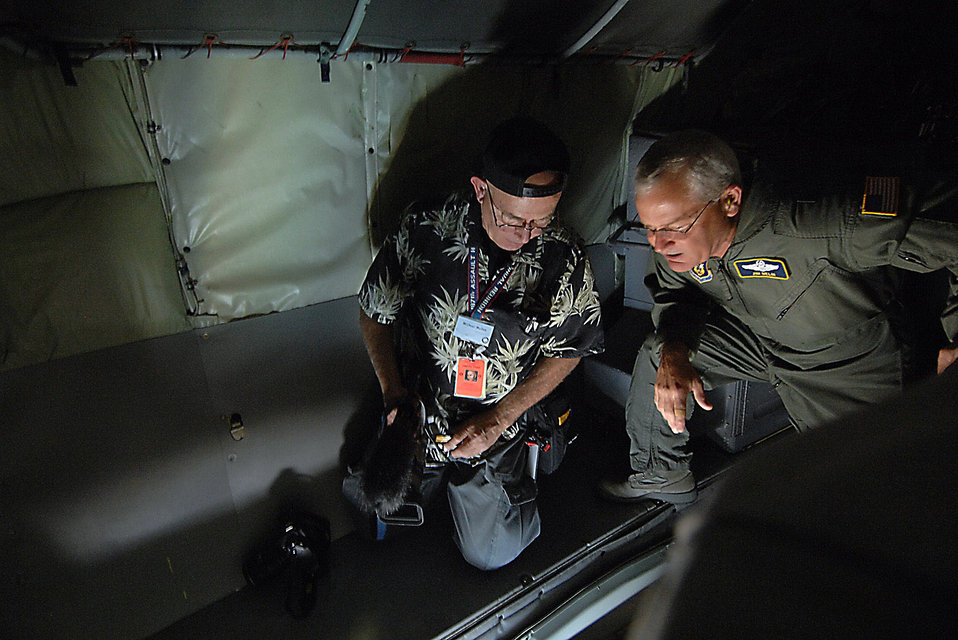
Lights, camera, Air Force Week

Brig. Gen. James L. Melin (right) looks at video shot by photographer Mike Mullen during a refueling mission and media flight for Air Force Week Los Angeles Nov. 12 from March Air Reserve Base, Calif. General Melin is the 452nd Air Mobility Wing commander at March ARB. Mr. Mullen is from the San Gabriel Valley Newspaper Group.